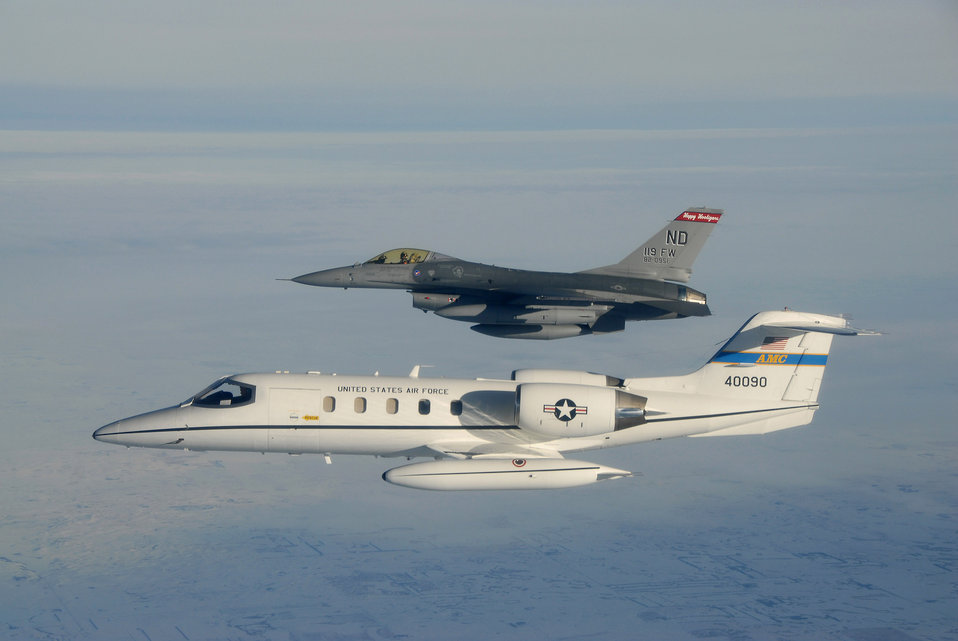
Escort

Capt. Stephanie Kelsen pilots a North Dakota Air National Guard F-16 Fighting Falcon alongside the first C-21 to join the 119th Fighter Wing as it flies into Fargo, N.D. Jan. 10.